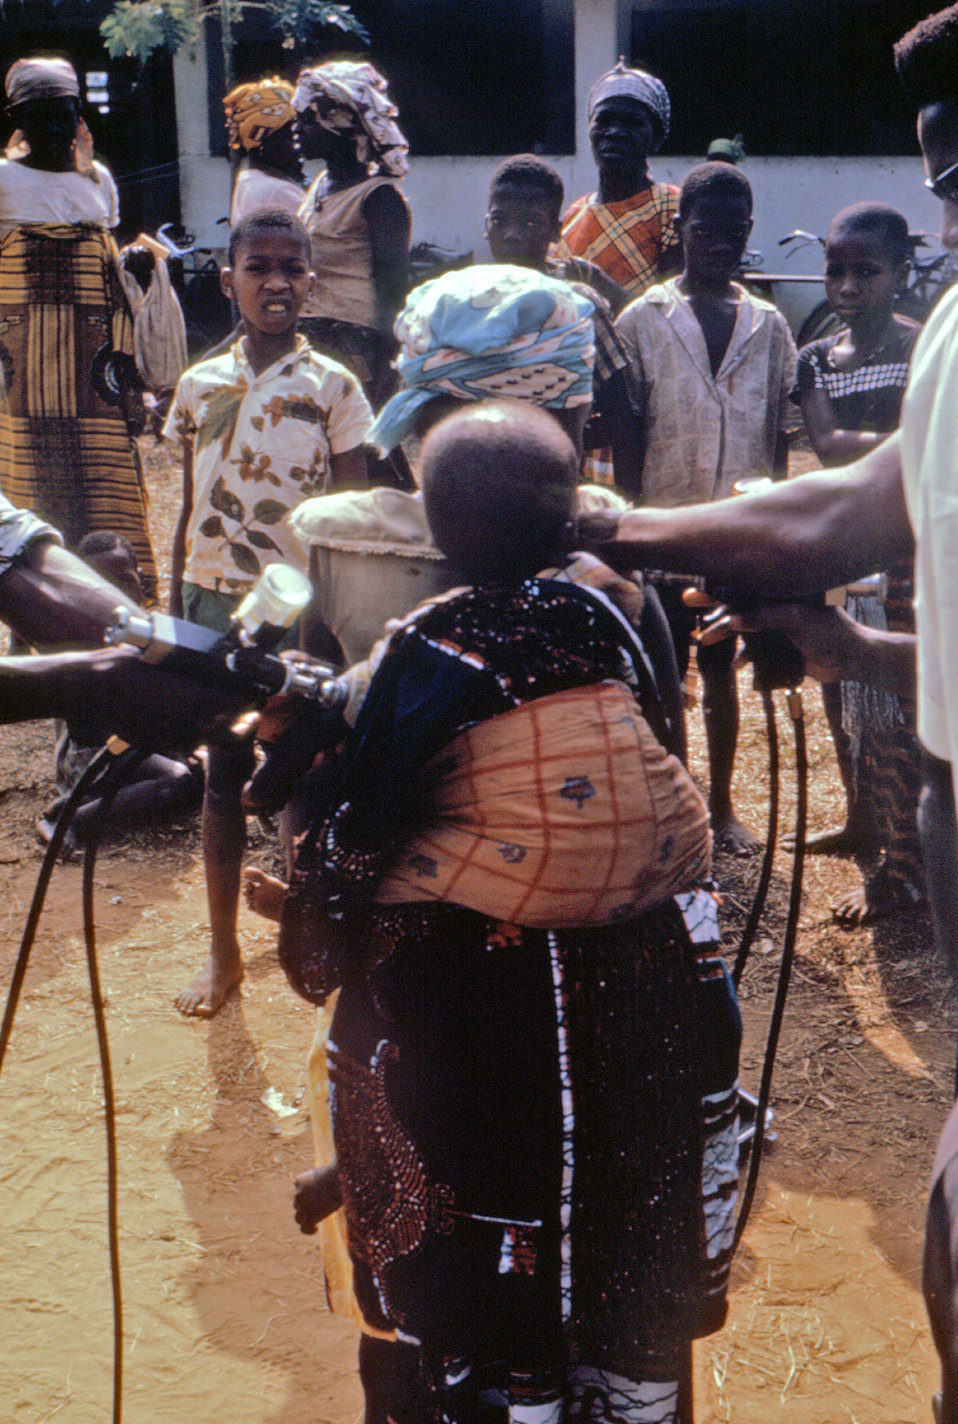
These Nigerian children were photographed as they received vaccinations for measles, and smallpox as part of CDC's relief effort during the Biafran war.